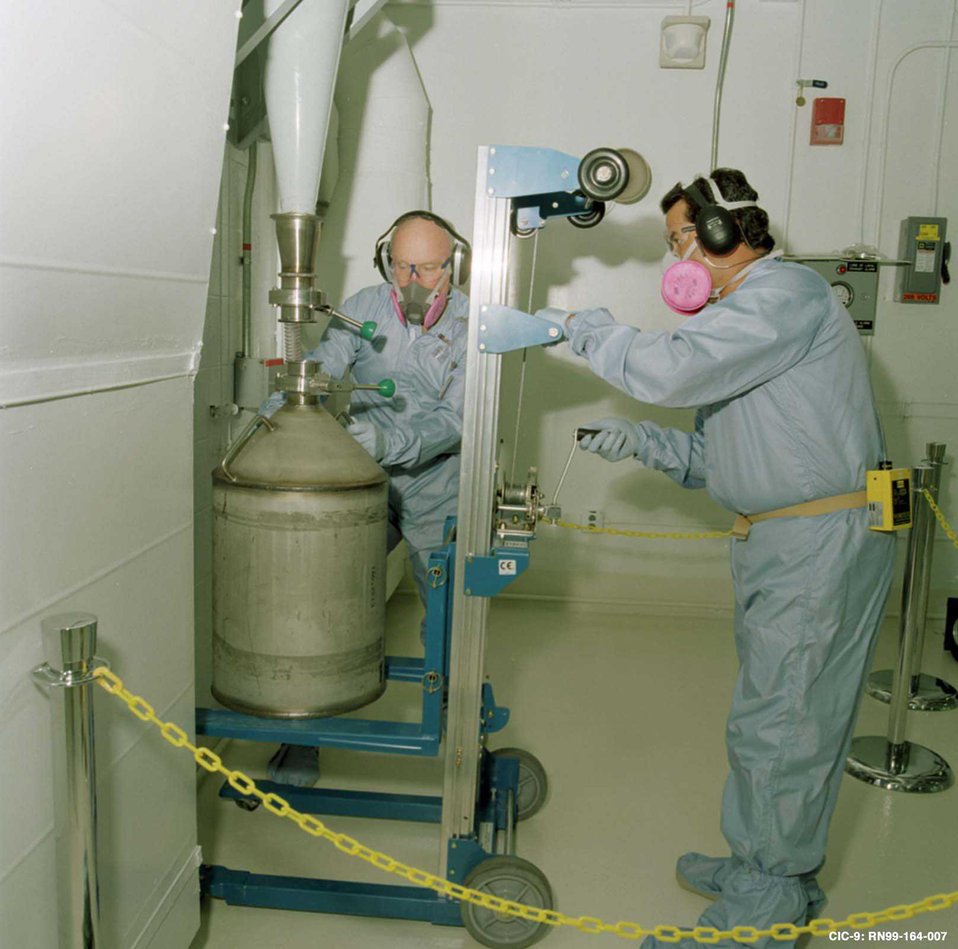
WASTE COLLECTION ACTIVITIES INSIDE THE BERYLLIUM TECHNOLOGY FACILITY AT LANL.

THE BERYLLIUM TECHNOLOGY FACILITY AT DOE'S LOS ALAMOS NATIONAL LABORATORY IS THE FIRST STATE-OF-THE-ART FACILITY IN THE U.S. DESIGNED SPECIFICALLY FOR WORKING WITH BERYLLIUM. WASTE COLLECTION, AIDED BY HIGH POWERED VACUUM CONNECTIONS IS ESSENTIAL PARTICULARLY BECAUSE OF CONCERNS ABOUT CHRONIC BERYLLIUM DISEASE.